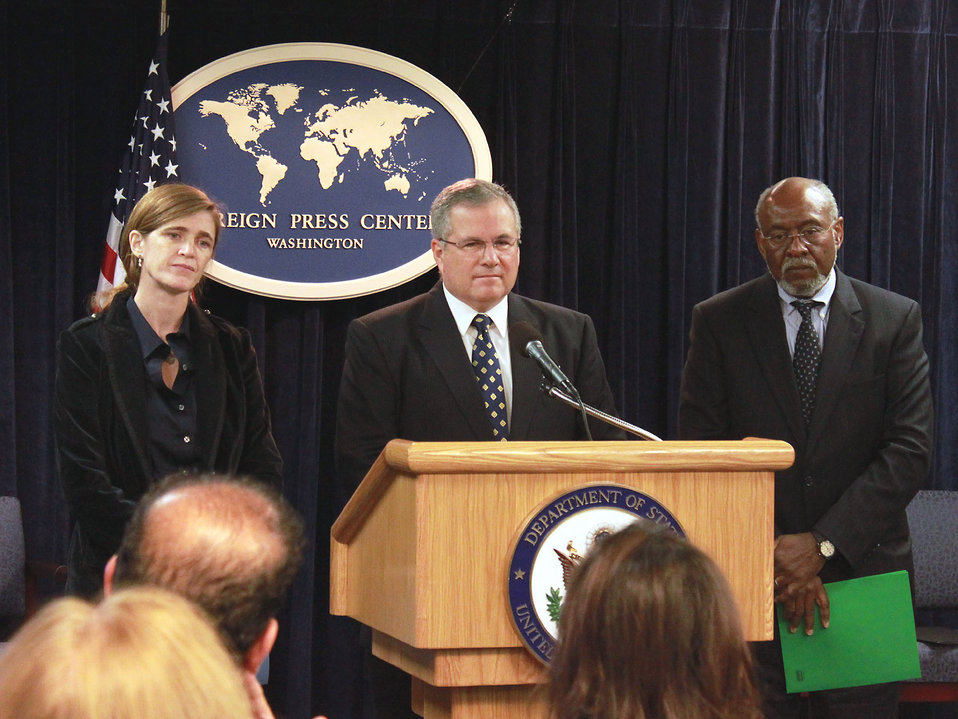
Assistant Secretary Carson, Special Envoy Gration, and Special Assistant Power Brief on Sudan

U.S. Assistant Secretary of State for African Affairs Johnnie Carson, U.S. Special Envoy to Sudan Scott Gration, and Special Assistant to the President Samantha Power brief the press on Sudan at the Foreign Press Center in Washington, D.C., October 22, 2010.